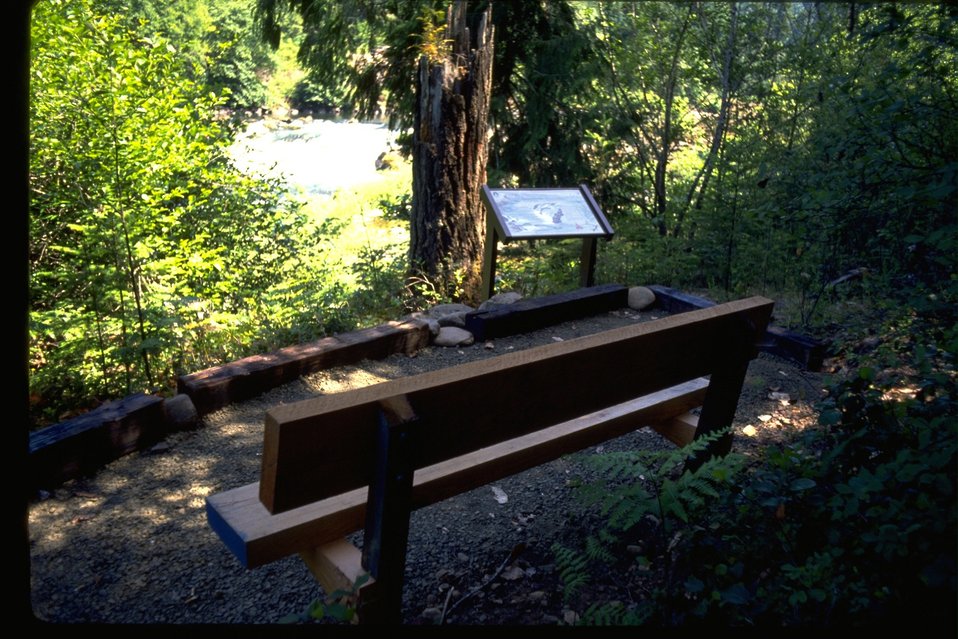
Bench along trail to Deadline Falls.